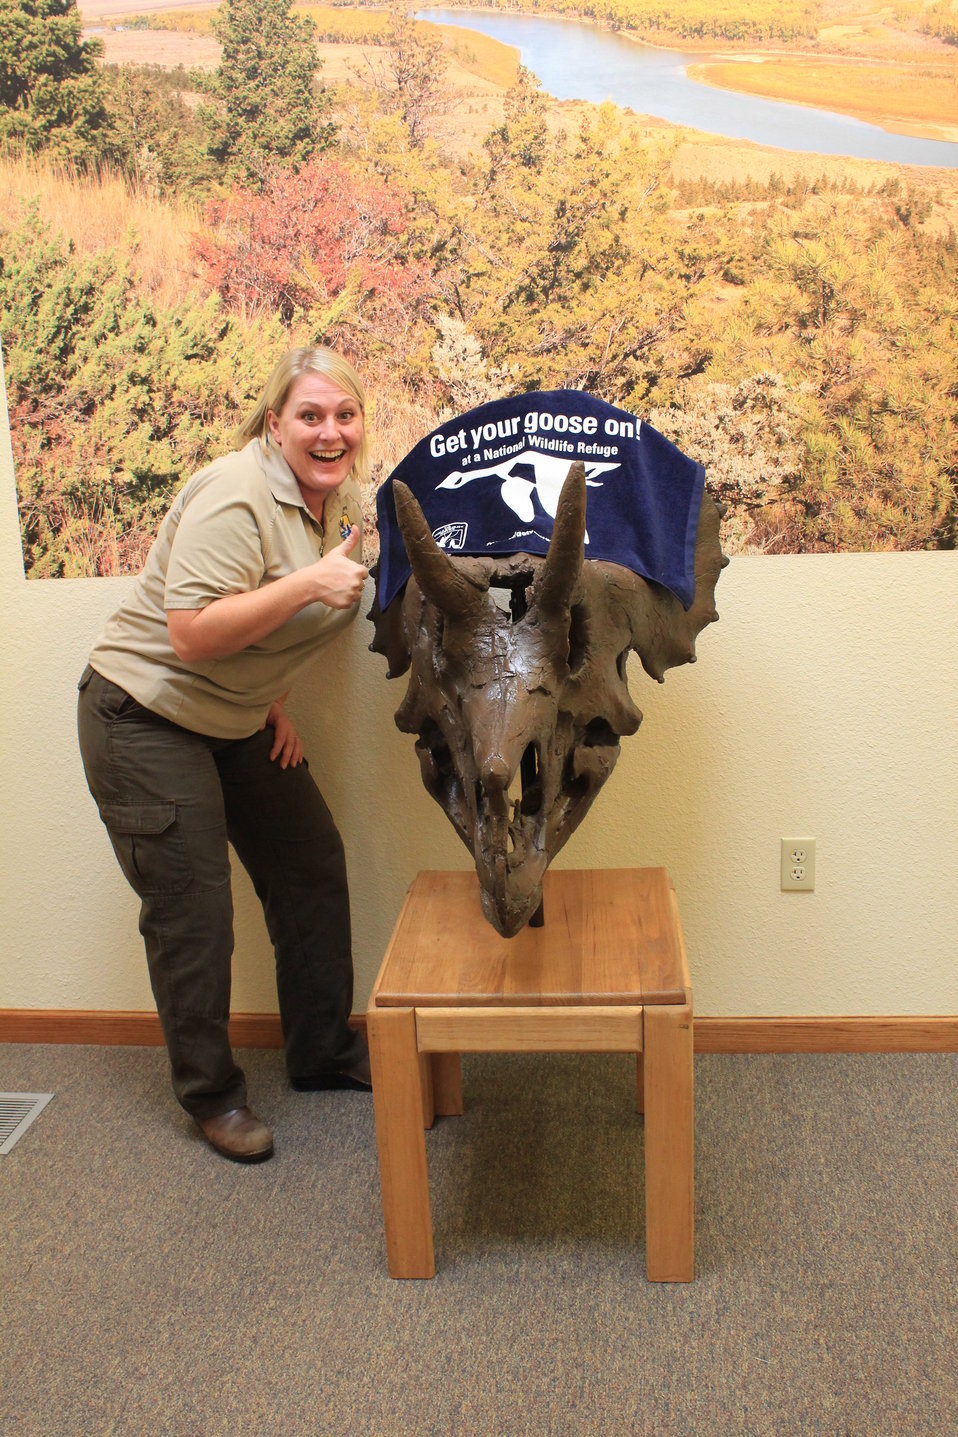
Get Your Goose On! - Triceratops Style